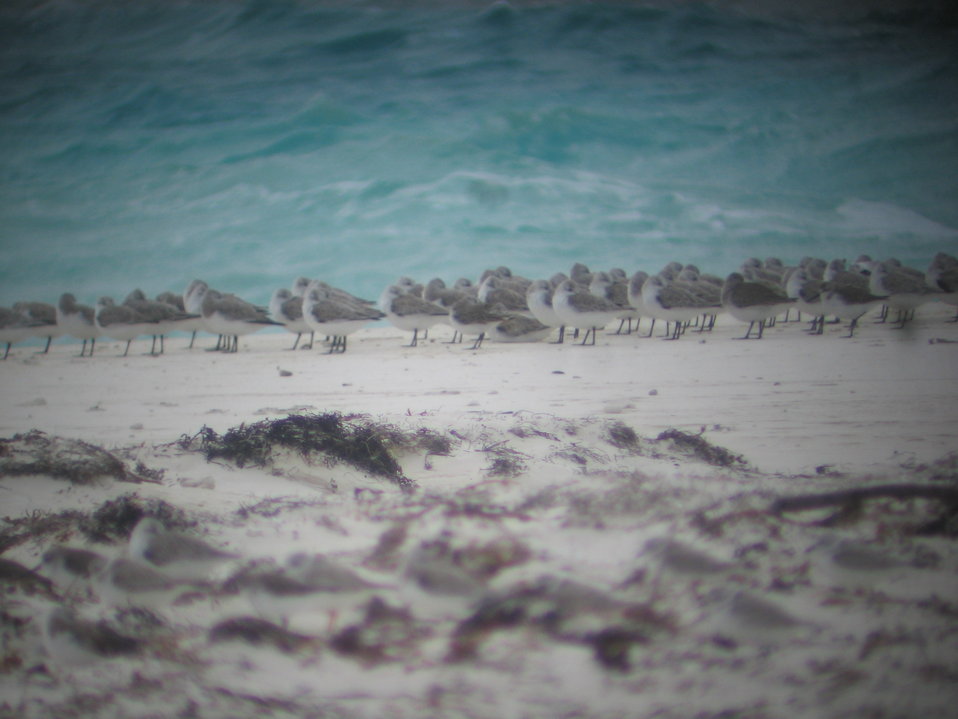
Mixed shorebird flock through spotting scope

Piping plovers (foreground), sanderlings (one of the most commonly seen shorebird species during survey), other sandpipers at at Berry Islands.